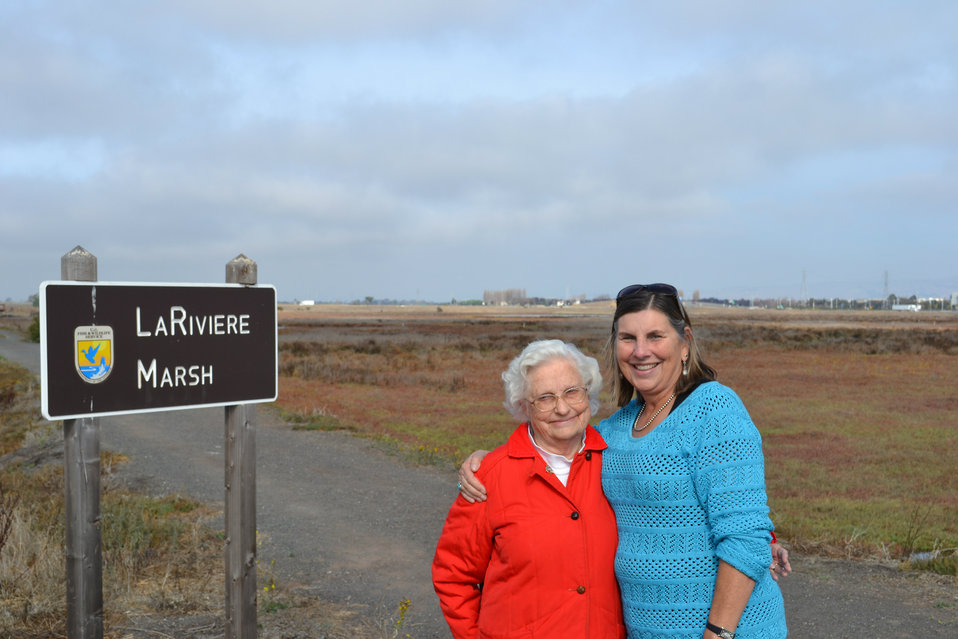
Florence LaRiviere & Cay Goude, TMRP-11-14-13

Photo Credit: Doug Cordell/USFWS

The U.S. Fish and Wildlife Service was joined by the California Department of Fish and Wildlife, the Coastal Conservancy, and many other environmental organizations active in the Bay Area to celebrate the finalization of the Recovery Plan for Tidal Marsh Ecosystems in Northern and Central California.

Here Florence LaRiviera and Cay Goude, Assistant Field Supervisor for the USFWS's Sacramento Field Office stand by the marsh dedicated to Florence and her husband.